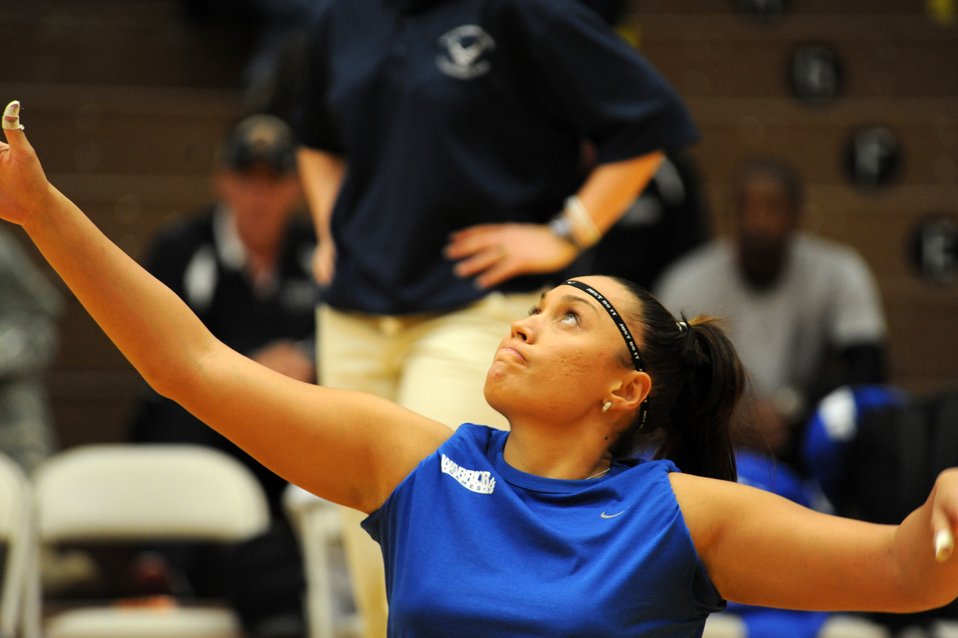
AF Volleyball wins Bronze at Warrior Games

Air Force Warrior Games athlete, Jennifer Stone, serves the ball during the Warrior Games sitting volleyball match against Army at the U.S. Olympic Training Center in Colorado Springs, Colo., May 13, 2010.